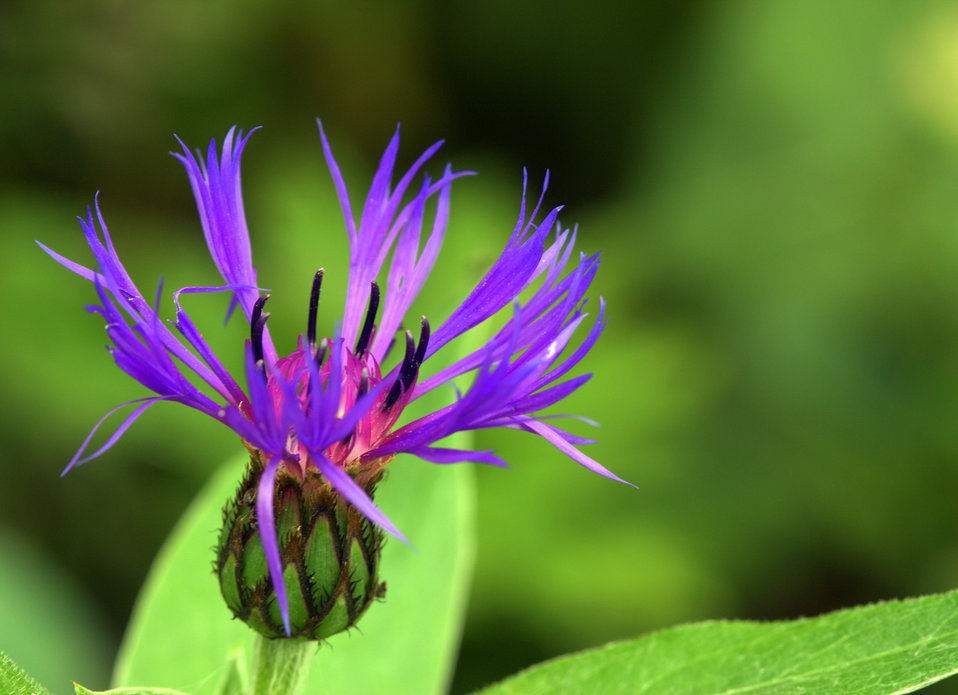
Centaurea

Flower of the centaurea family.